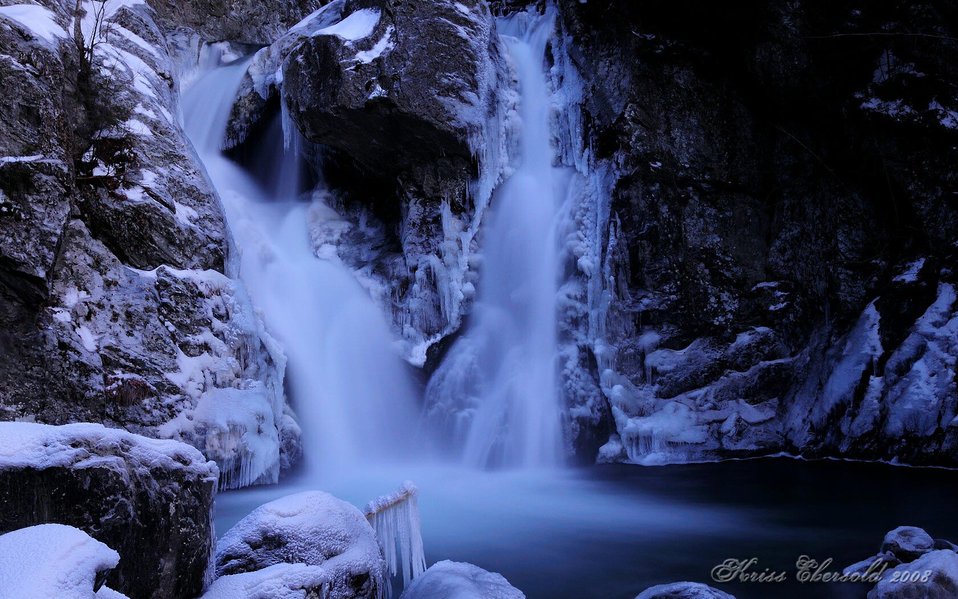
Uploaded by request of W. Kriss Ebersold

Taken in Bash Bish Falls, Berkshire Mountains, Western Massachusetts

This was taken at night after climbing an ice covered trail for almost a mile. I used a very slow shutter speed to make use of the available light.